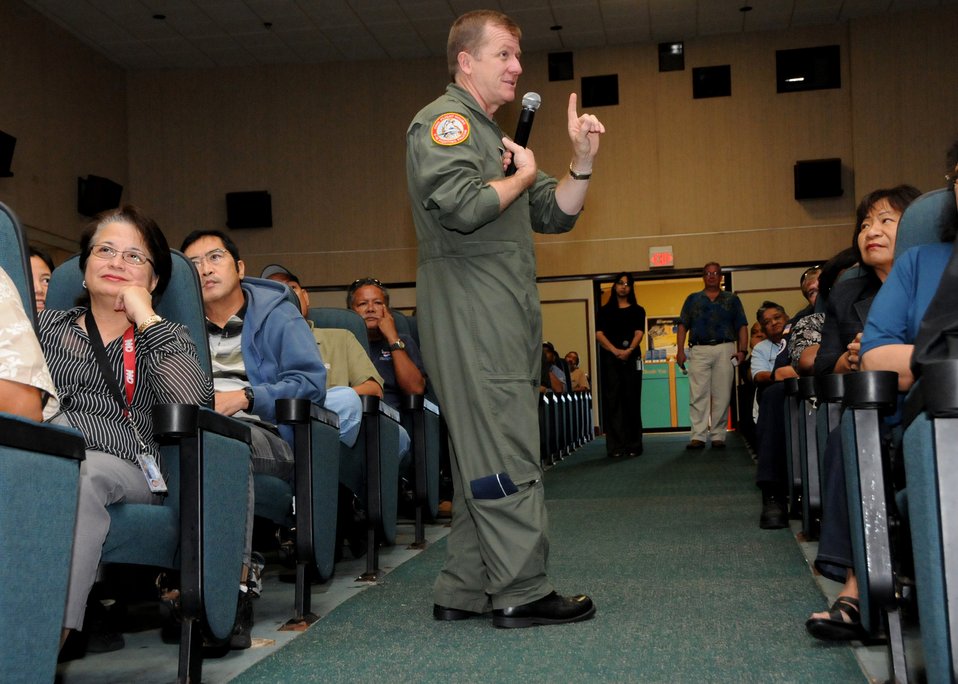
Andersen officials to transfer management functions to Navy

Brigadier Gen. Philip M. Ruhlman speaks to base civilians during a town hall meeting about joint basing and the future for these soon to be Navy employees Nov. 21 at Andersen Air Force Base, Guam.